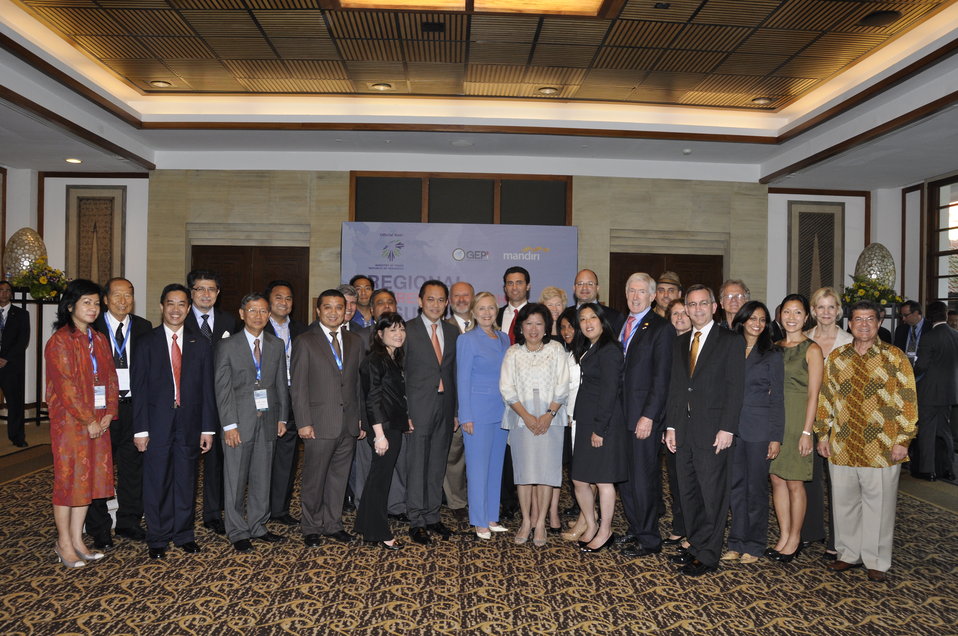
Secretary Clinton, Indonesian Trade Minister Pangestu, Ambassador Maricel, and Under Secretary Hormats Pose for a Photo With Delegates from the Global Entrepreneurship Program Indonesia

U.S. Secretary of State Hillary Rodham Clinton, center, Indonesian Minister of Trade Mari Pangestu, right of the Secretary, U.S. Ambassador to Indonesia Scot Maricel, fourth from right, and U.S. Under Secretary of State for Economic, Energy and Business Affairs Robert Hormats, fifth from right, pose for a photo with delegates from the Global Entrepreneurship Program Indonesia before entering the Regional Entrepreneurship Summit in Bali, Indonesia, on July 23, 2011.